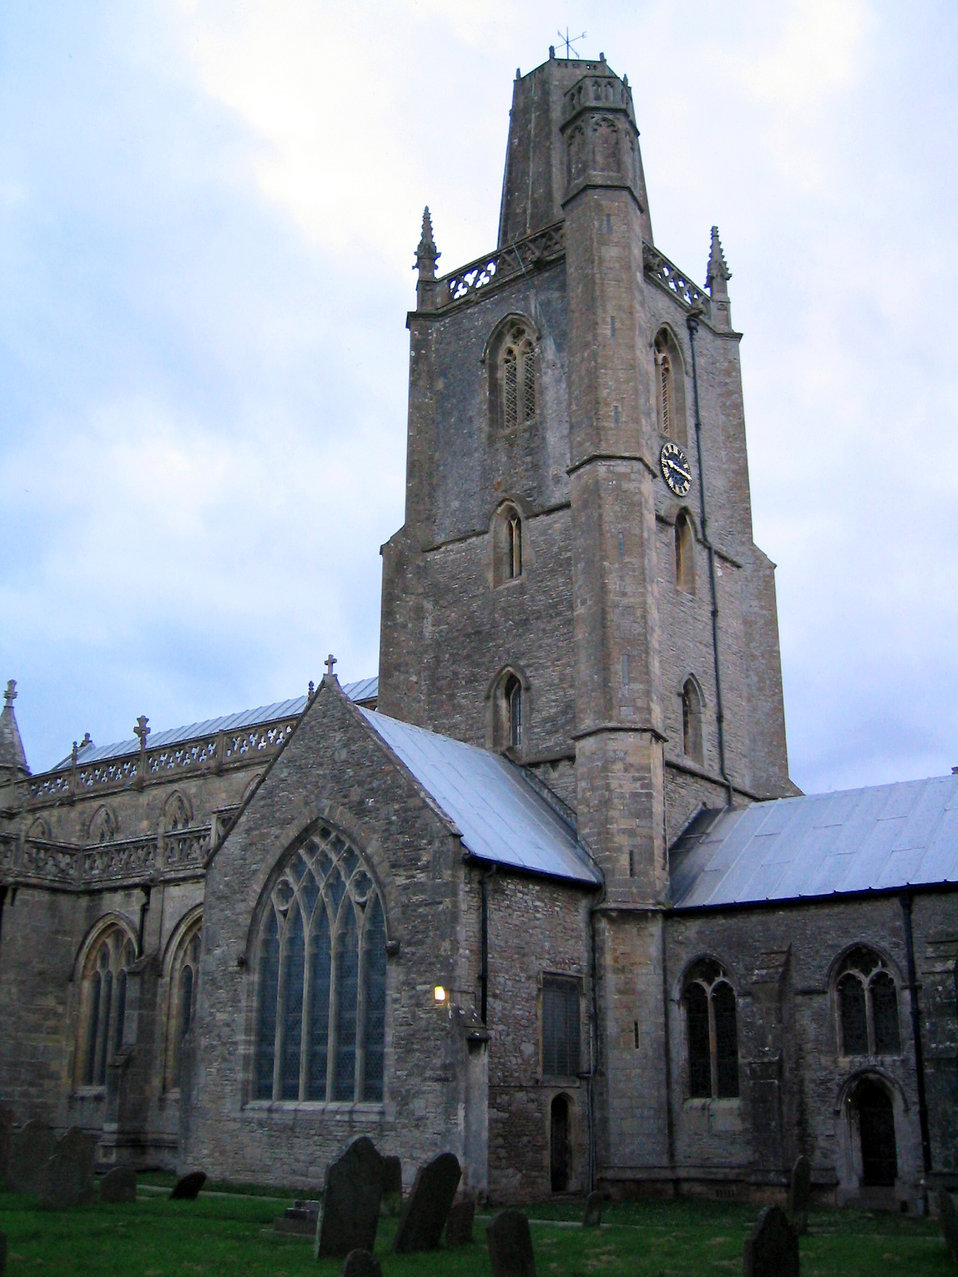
The parish church of St Mary the virgin, Yatton, North Somerset, England. Photo taken by me 2005-07-02.